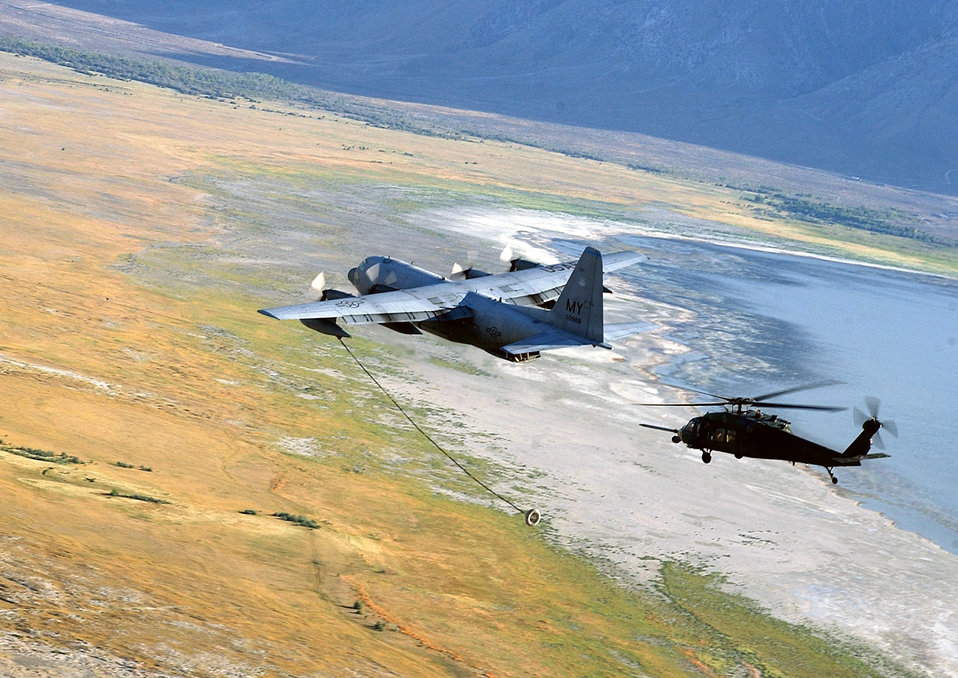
Gas on the go

NAVAL AIR STATION FALLON, Nev. -- An HH-60 Pave Hawk helicopter from the 41st Rescue Squadron moves into position behind an HC-130N from the 71st Rescue Squadron for an aerial refueling mission on Aug. 13. Both units are from Moody Air Force Base, Ga., participating in Desert Rescue XI. The joint-service combat search and rescue training exercise simulates downed aircrew behind enemy lines and allows airmen to practice rescue-related missions. They also experiment with new techniques in realistic scenarios.